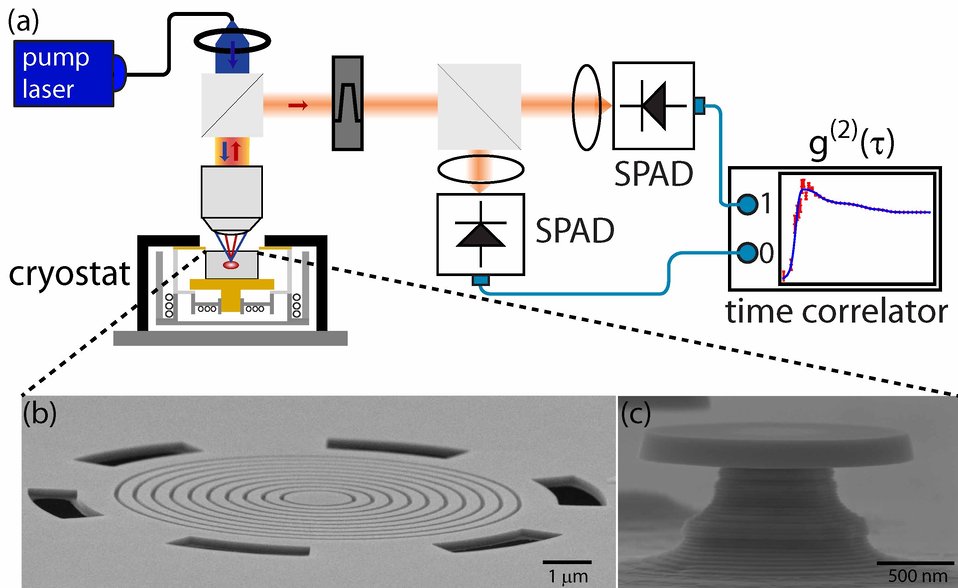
Don't Blink! NIST Studies Why Quantum Dots Suffer from 'Fluorescence Intermittency'

Experimental apparatus used to investigate quantum dot blinking. A quantum dot is optically excited using a laser and its fluorescence is collected and split into two paths, each equipped with a single photon avalanche diode (SPAD). A time correlator is used to record the arrival times of the photons on each SPAD, from which the photon autocorrelation function is determined. SEM images of the quantum dot devices studied include a circular grating 'bullseye' optical cavity (b) and a microdisk optical cavity (c).